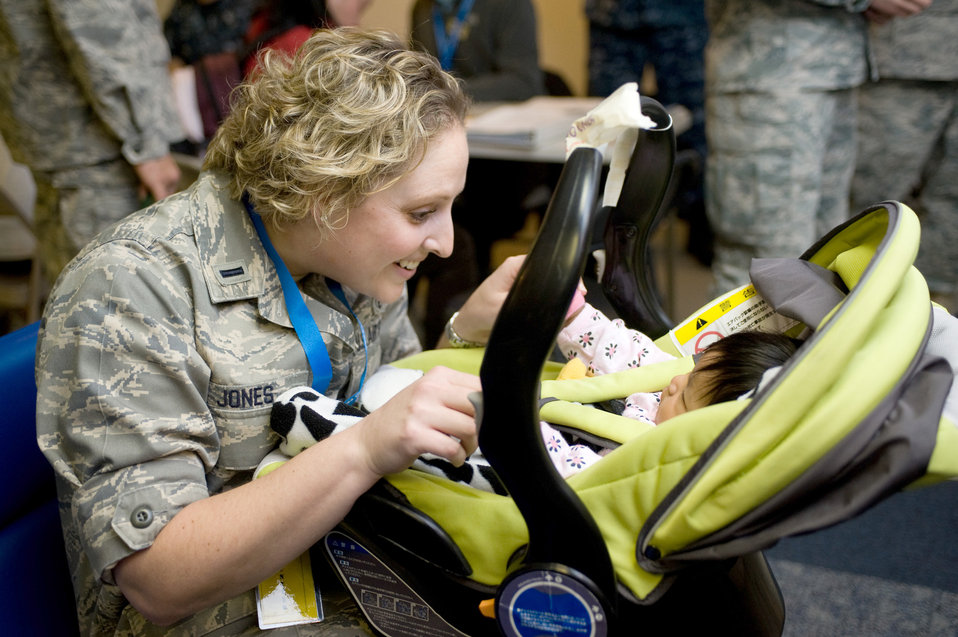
Travis AFB volunteers aid Operation Pacific Passage

First Lt. Fawn Jones plays with a baby March 28, 2011, at Travis Air Force Base, Calif. The child and her mother arrived here following the March 11 natural disasters in Japan. In support of Operation Pacific Passage, Travis AFB members assisted more than 2,600 military dependents as they voluntarily relocated to the U.S. Jones is a social worker assigned to the 60th Medical Group.